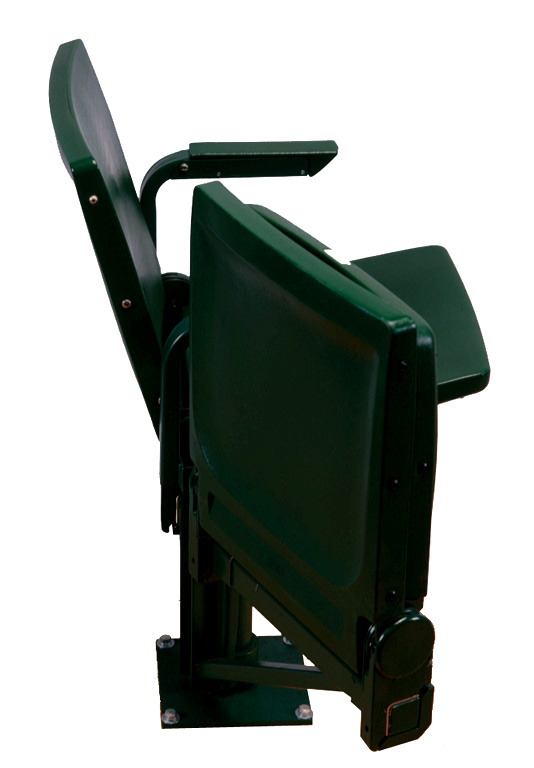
This was one of five images (PHIL# 9139 - 9143), depicting two rotating, folding stadium seats: one in the 'open' position; one in a closed, mid-rotated position. These seats provided a unique level of flexibility for patrons of spectator events, where fixed seats were typically installed. Designed to provide the same range of seating options to people who use wheelchairs or scooters, they were able to be installed in either newly constructed or modified projects. The design combined two seat assemblies mounted and articulated from a single post. This flexibility allowed people using wheelchairs to sit with friends and family members, and therefore, feel integrated with the general public. A walking person could also use a seat, fold it up, or swing it to the side, and in this way, exit the row or aisle behind, while not disturbing the occupants of adjacent seats.